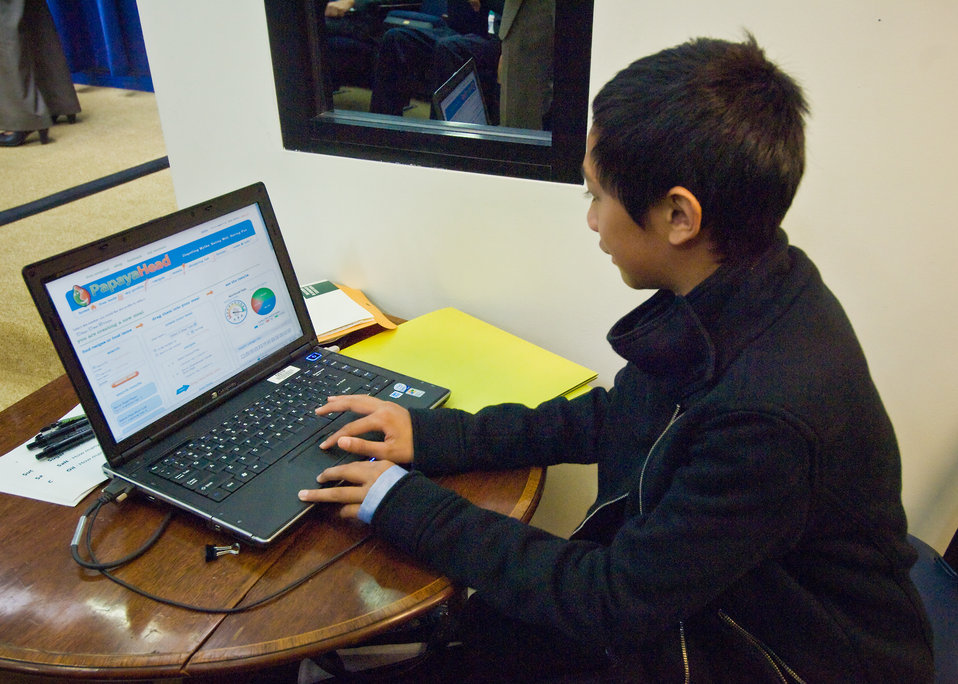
Tristan Jenkins-Hantze, Olympia, Washington playing, “PapayaHead,” the Second Prize winning app of the The Apps for Healthy Kids competition at the White House in Washington, DC, Wednesday, September 29, 2010. Tristan is one of the team members involved in developing “PapayaHead” for The Apps for Healthy Kids competition is part of First Lady Michelle Obama’s Let’s Move campaign to end childhood obesity within a generation. The competition challenges software developers, game designers, students and other innovators to develop fun and engaging software tools and games to urge children, especially “tweens” (children ages 9-12) – directly or through their parents – to eat better and be more physically active. The applications are software tools or games for the web, personal computer, mobile handheld device, console or any software platform available to the public. “Papaya Head,' is a family meal planning website that allows each family member to fill out a unique profile of likes, dislikes, allergies and unique nutritional requirements. Fun drag and drop tools let the family build a meal plan for the day and graphically see the nutritional results of their choices.
USDA Photo 10di1507-29 by Bob Nichols.